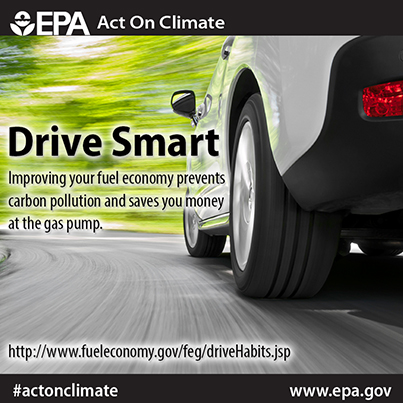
Drive smart. Improving your fuel economy prevents carbon pollution and saves you money at the gas pump. #ActOnClimate ttp://www.epa.gov/earthday/actonclimate/